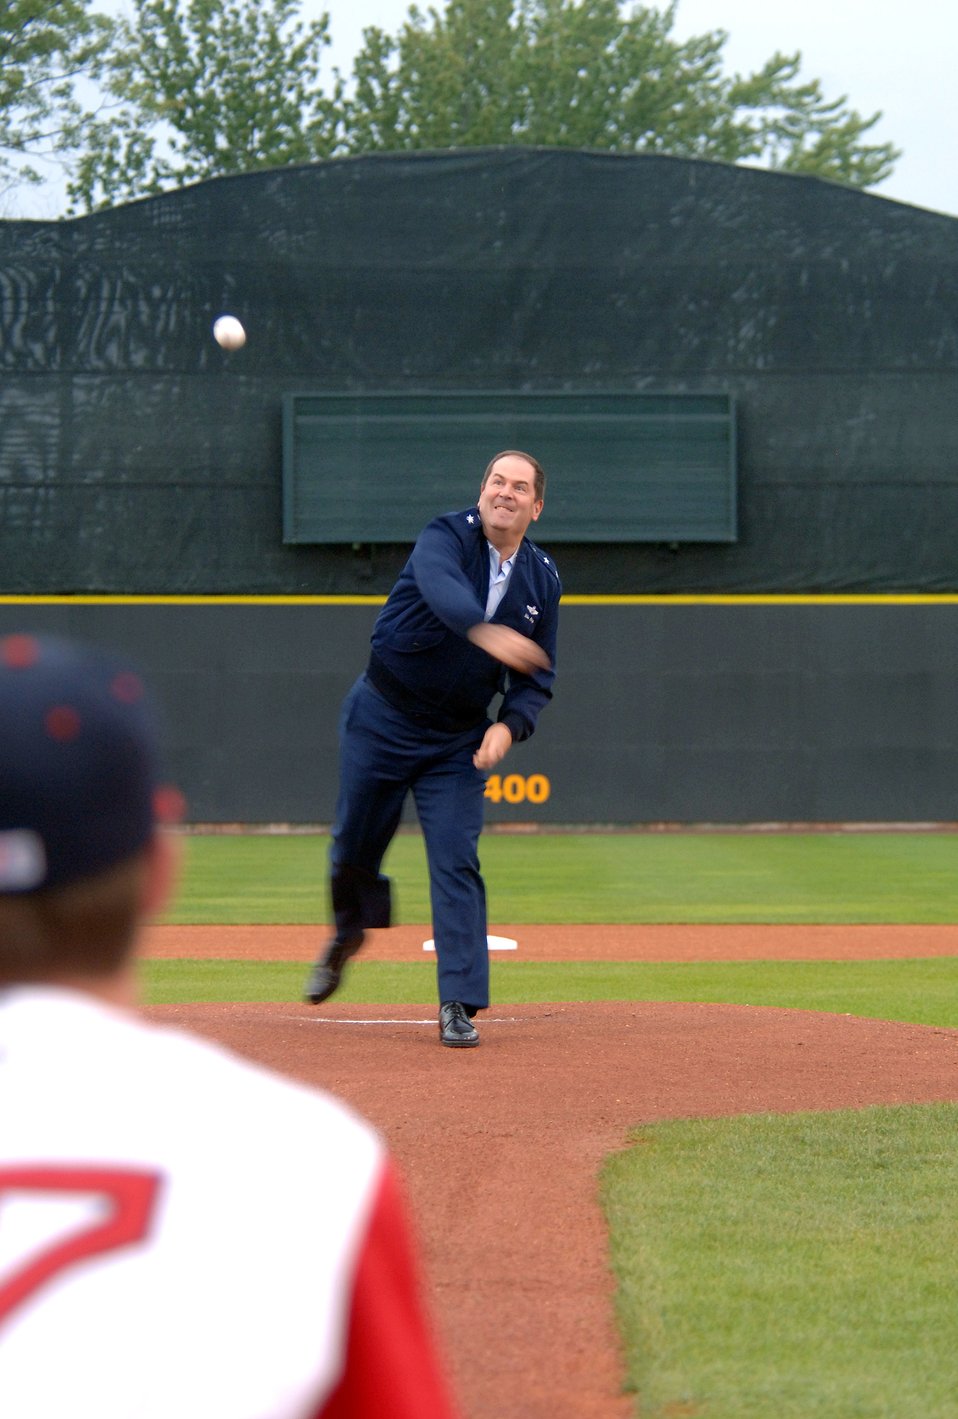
General, Red Sox icon make Air Force Week pitches

As part of Air Force Week New England festivities, Maj. Gen. Michael A. Akey, chief of staff of the Massachusetts Air National Guard, throws out the first pitch to a player on the Lowell, Mass., Spinners, a minor league baseball team of the Boston Red Sox.